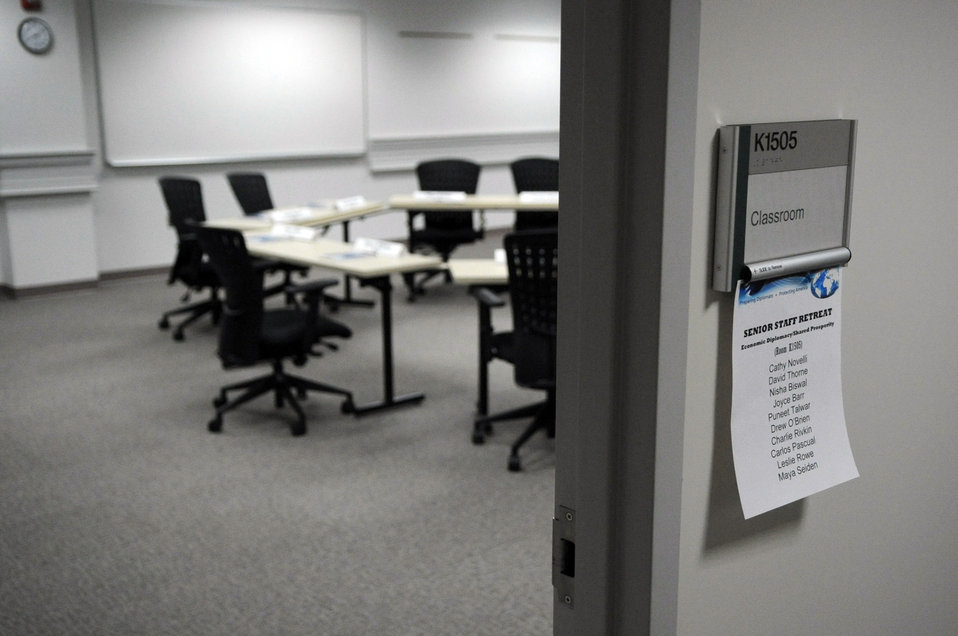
Breakout Room Awaits Attendees Amid State Department Senior Staff Retreat

The roster awaits members of a breakout group during a senior State Department staff retreat in Arlington, Virginia, on February 10, 2014.